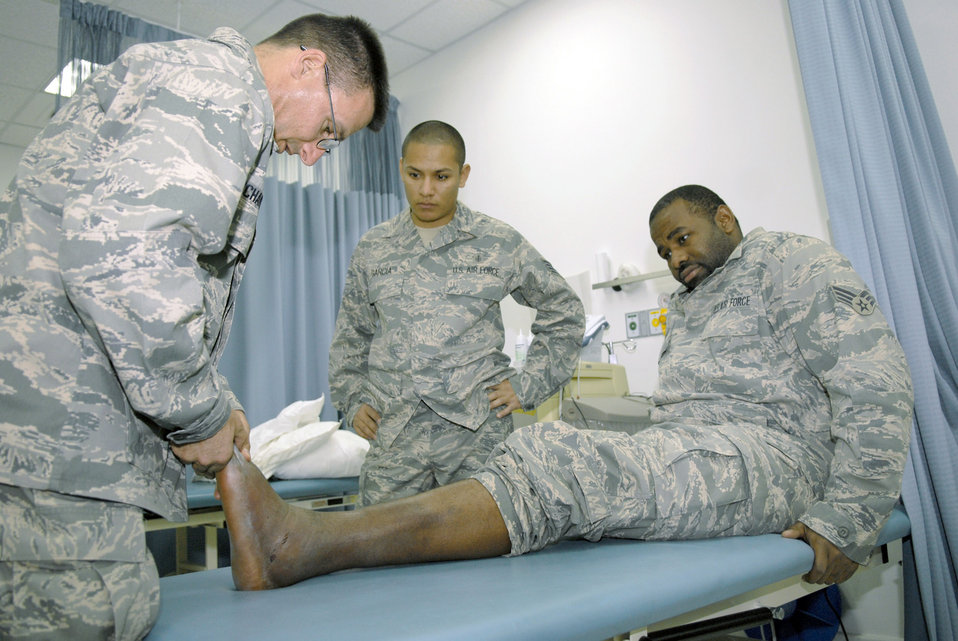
Physical therapy keeps Airmen fit to fight

Maj. Jesse Richardson (left), the 379th Expeditionary Medical Group physical therapy element chief at an air base in Southwest Asia, performs isometrics on Senior Airman Adam Carter Feb. 19 for an ankle sprain as Staff Sgt David Garcia, NCOIC of the physical therapy clinic, observes. The physical therapists concentrate on injuries involving ankles, knees, hips, back and neck and work to get warfighters back on the job as soon as safely possible. They also travel around the base talking to individuals and groups about ways to prevent injuries.